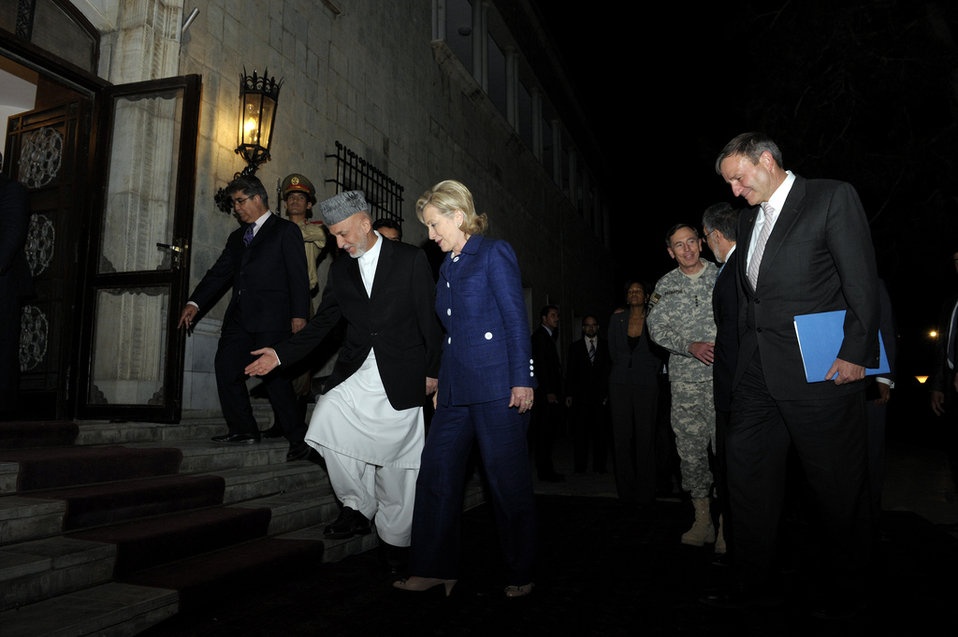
President Karzai Welcomes Secretary Clinton, General Petraeus, and Ambassador Eikenberry to the Presidential Palace

Afghan President Hamid Karzai (left) welcomes U.S. Secretary of State Hillary Rodham Clinton, Commander of the NATO International Security Assistance Force (ISAF) and Commander of U.S. Forces Afghanistan (USFOR-A), and U.S. Ambassador to Afghanistan Karl Eikenberry to the Presidential Palace in Kabul, Afghanistan, on July 19, 2010.